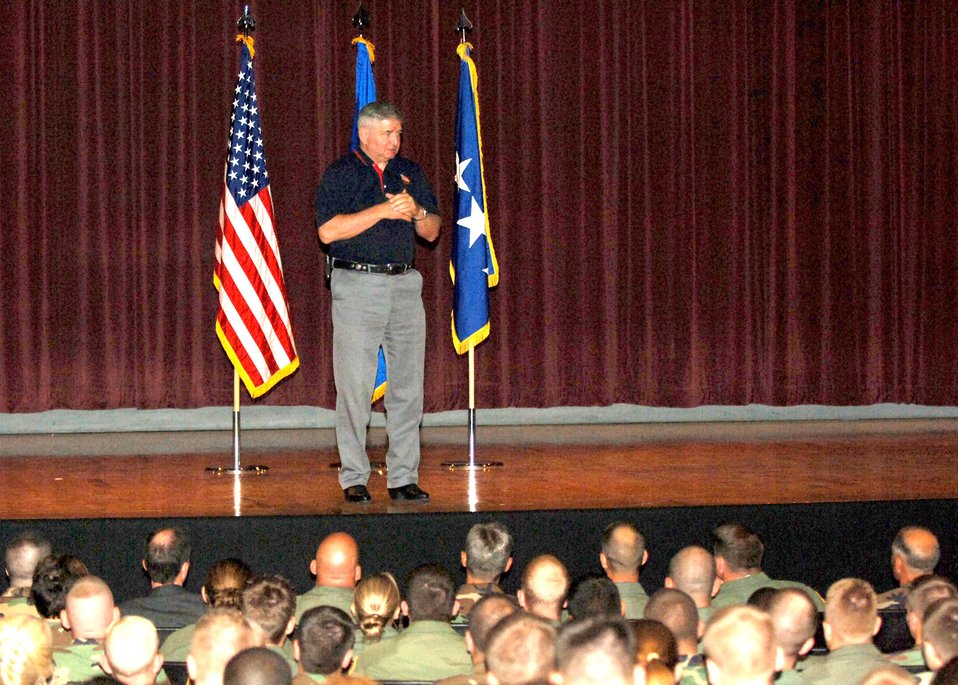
Gen. Fogleman visits Fairchild, praises AMC

Retired Gen. Ronald R. Fogleman, the former Air Force chief of staff, speaks to more than 400 Airmen July 24 during the 92nd Air Refueling Wing's 60th Anniversary Speakers Symposium at Fairchild Air Force Base, Wash. The general, who has 34 years of active-duty experience and a master's degree in military history, spoke to the Airmen about the history and future Air Mobility Command and the Air Force.